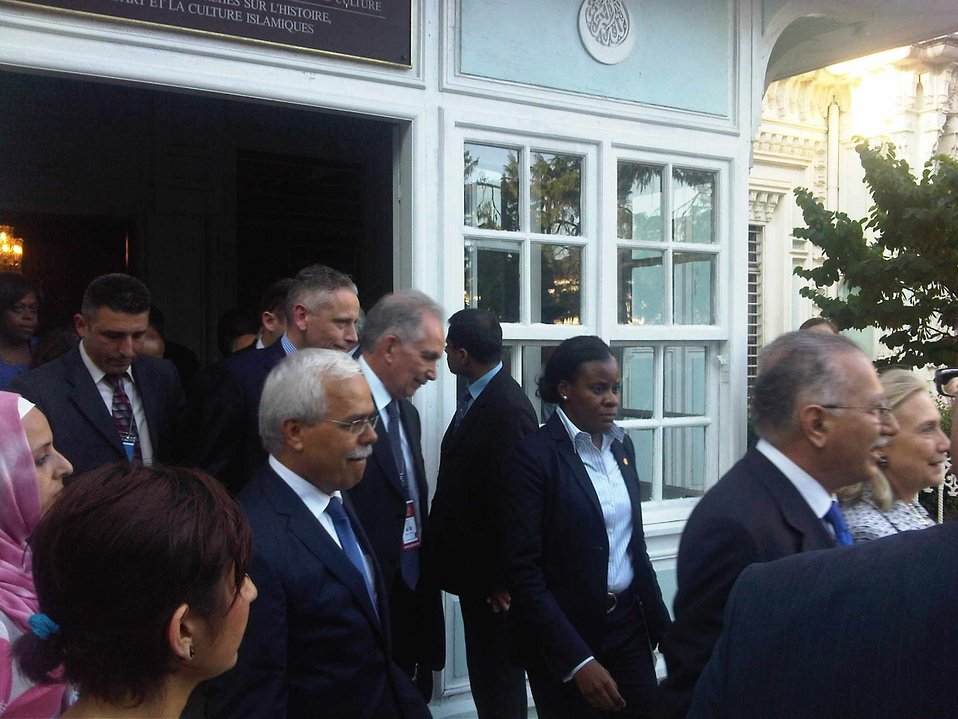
Secretary Clinton Speaks With Organization of the Islamic Conference (OIC)

U.S. Secretary of State Hillary Rodham Clinton speaks with members from the Organization of the Islamic Conference (OIC) while in Istanbul, Turkey, on July 15, 2011.